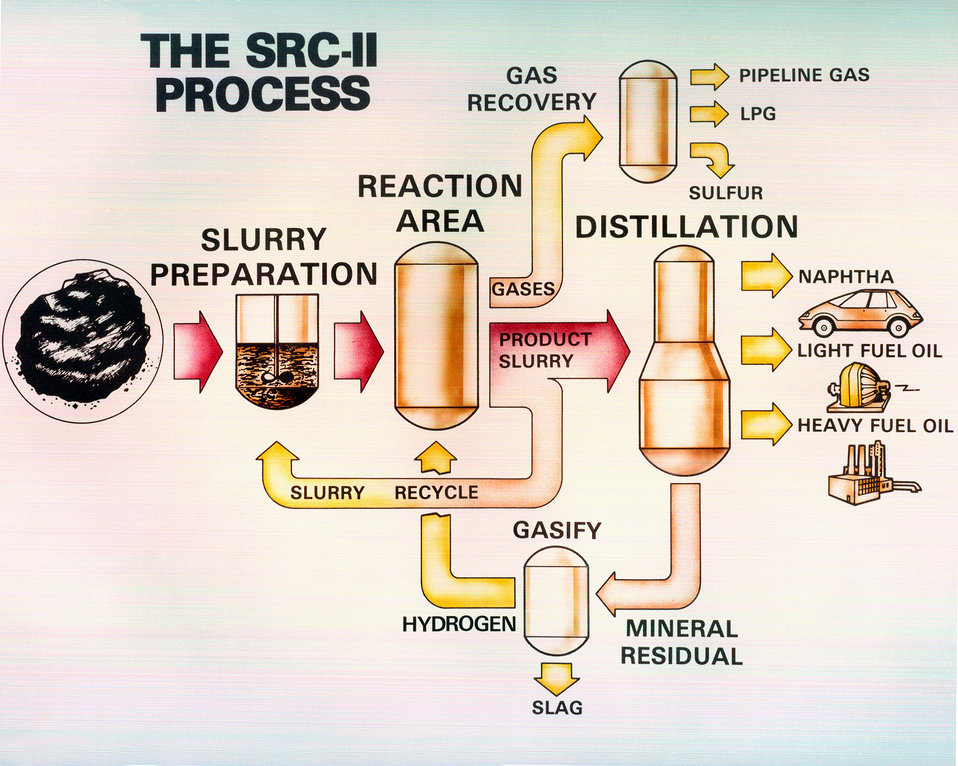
DIAGRAM OF THE SRC-II PROCESS.

THE SRC-II PROCESS IS DESIGNED TO PRODUCE PRIMARILY A CLEAN, NON-POLLUTING LIQUID FUEL FROM HIGH SULFUR COAL. OTHER PRODUCTS ARE EXPECTED TO BE PIPELINE QUALITY SYNTHETIC GAS, LIQUEFIED PROPANE AND BUTANE GASES, NAPHTHA, SULFUR, AMMONIA, AND TAR ACID BY-PRODUCTS. THE PROCESS INVOLVES CRUSHING THE COAL AND MIXING IT WITH A SLURRY MADE BY RE- CYCLING SOME OF THE OIL FROM THE PROCESS. HYDROGEN IS ADDED, AND THE MIXTURE IS HEATED AND MOVED INTO THE DISSOLVER. HERE, UNDER HIGH TEMPERATURE AND PRESSURE AND AIDED BY THE NATURAL CATALYSTS IN THE COAL, IT IS DISSOLVED. SULFUR IS REMOVED AS HYDROGEN SULFIDE. ASH AND UNDISSOLVED COAL ARE SEPARATED FROM THE LIQUID PRODUCT AND GASIFIED TO MAKE NEEDED HYDROGEN. MORGANTOWN WAS CHOSEN AS THE SITE BECAUSE OF ITS ABILITY TO ACCOMMODATE STORAGE, HANDLING, AND PROCES- SING OF COAL DURING THE THREE YEAR DEMONSTRATION PHASE AND THE LONG TERM OPERATIONS OF A MUCH LARGER COMMERCIAL PLANT.